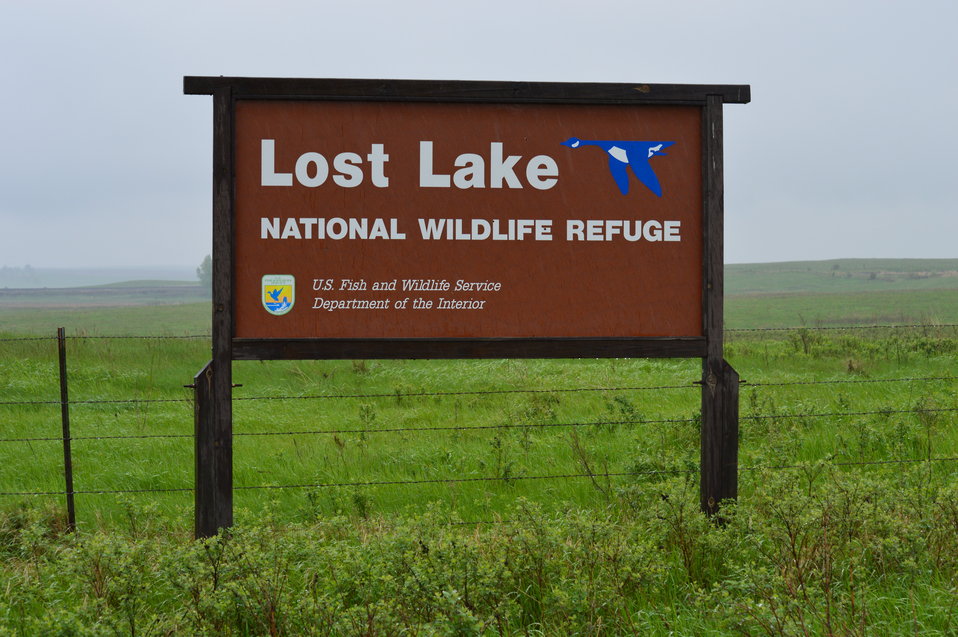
Lost Lake NWR sign

Scenery and wildlife at Lost Lake National Wildlife Refuge in North Dakota.